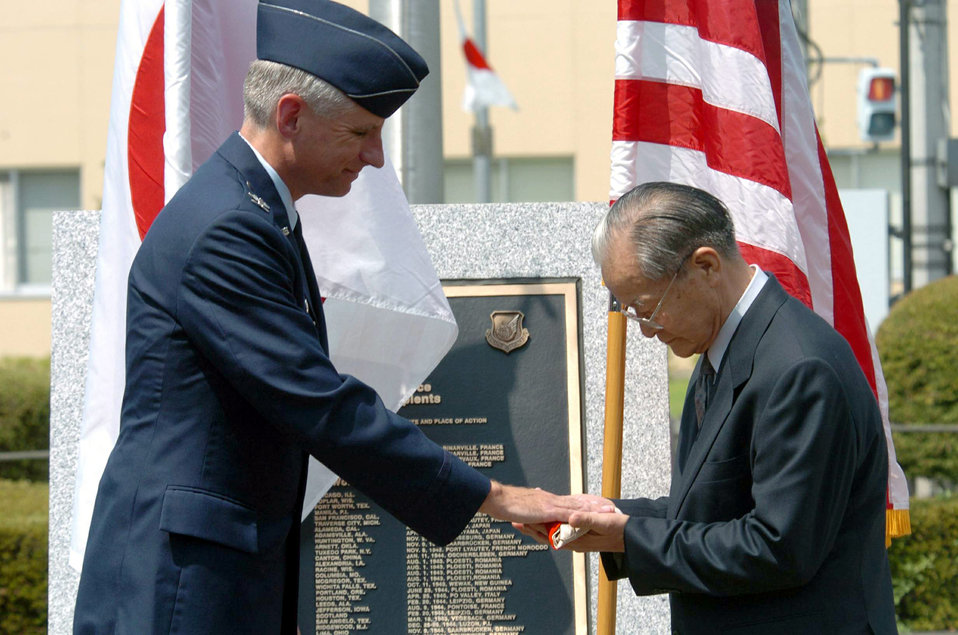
Honoring the past

YOKOTA AIR BASE, Japan -- Col. Mark Schissler (left) returns a Japanese flag to Manshichi Saeki during a ceremony here Aug. 6. The flag belonged to Mr. Saeki's older brother who died fighting against American forces during World War II. Colonel Schissler is commander of the 374th Airlift Wing.